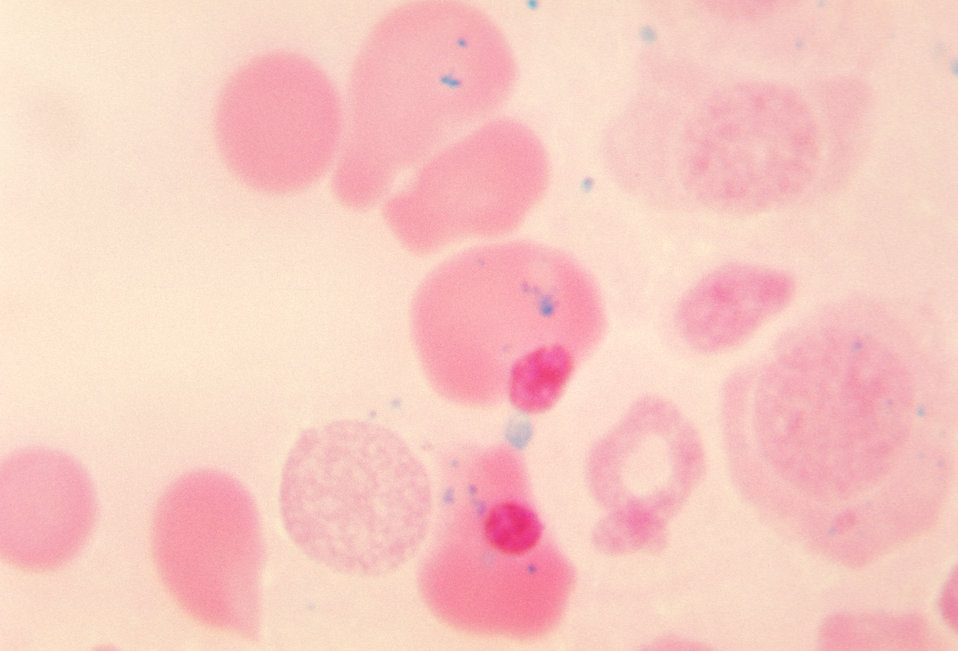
A photomicrograph of normal sideroblasts, using PAS stain with H&E counterstain.